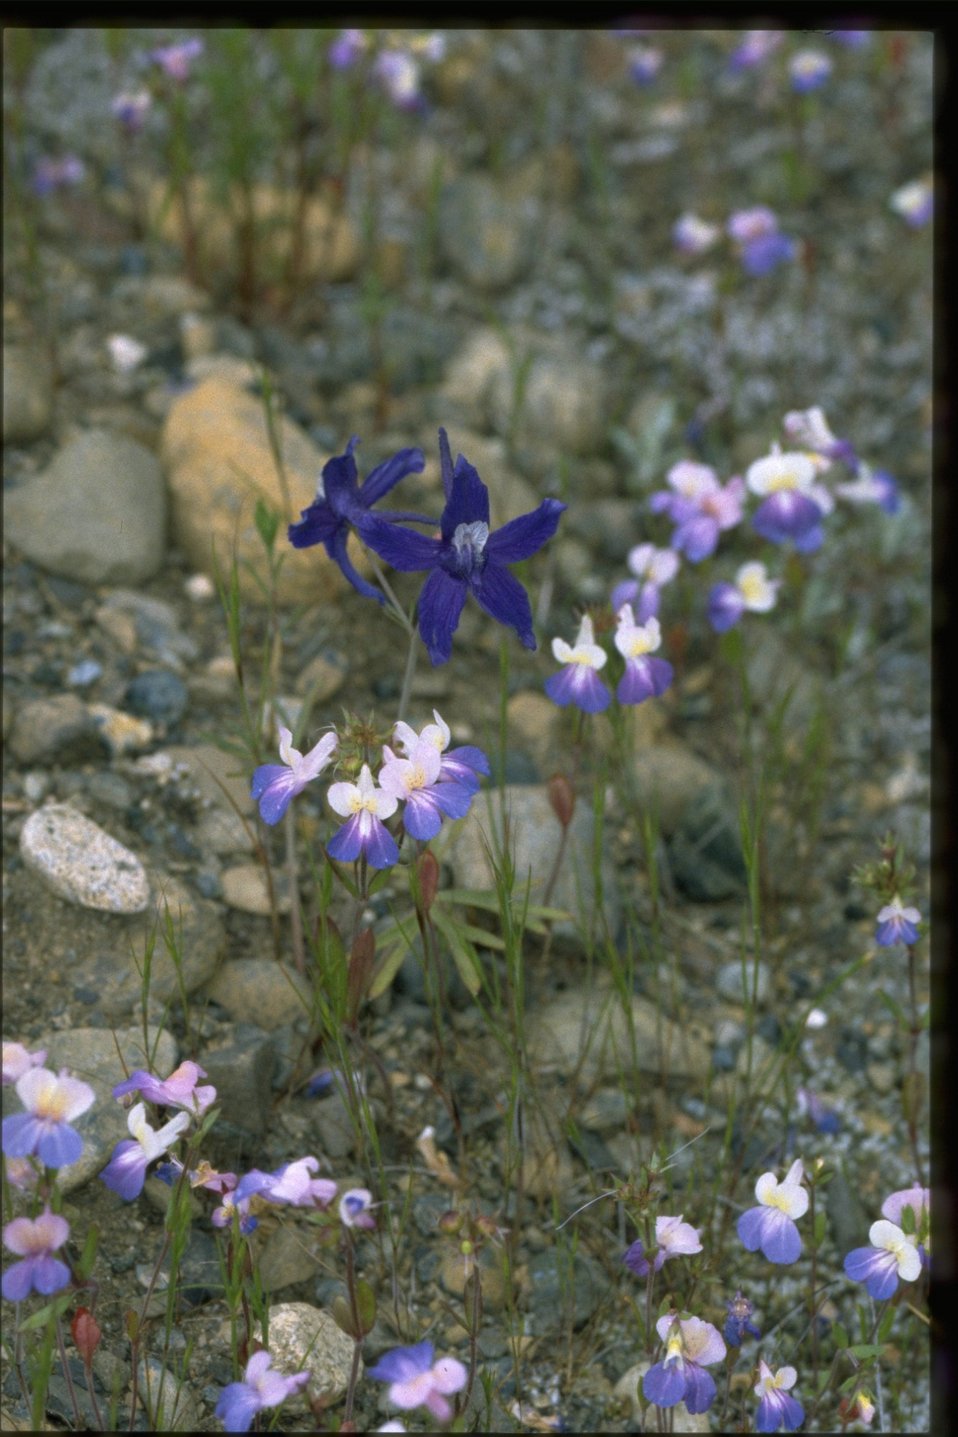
Medium shot of Delphinium wildflower.